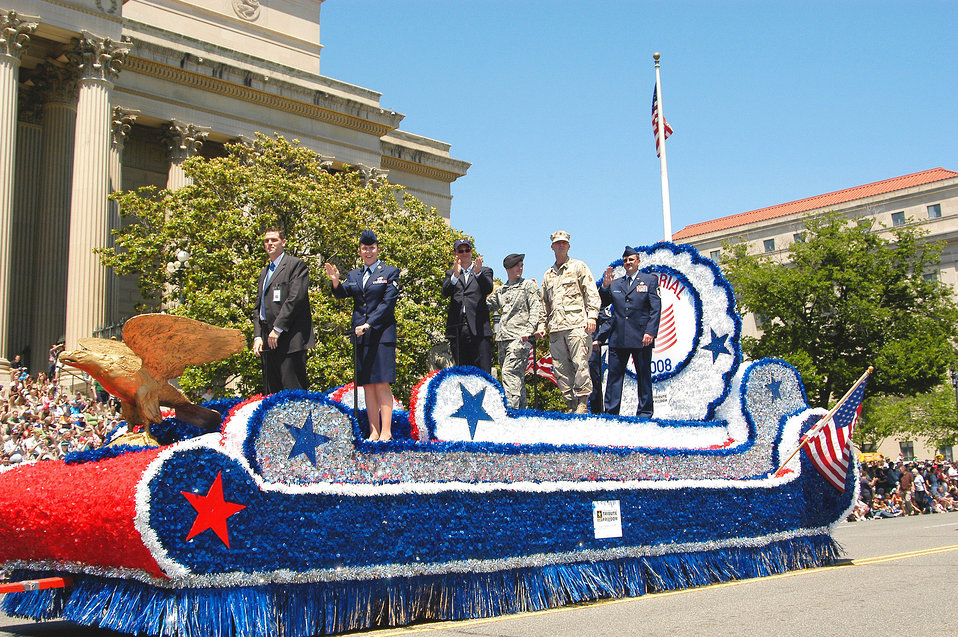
AFOSI Agent serves as Grand Marshall in National Memorial Day Parade

Special Agent Jac Christiansen (far right), Air Force Office of Special Investigations, Detachment 406, Columbus Air Force Base, Miss., and Senior Airman Mary Bullock (second from left), 11th Intelligence Squadron, Hurlburt Field, Fla., were handpicked by Air Force leadership to be grand marshals in this year's parade because of their heroic acts or outstanding work in support of Operations Iraqi Freedom or Enduring Freedom. Also aboard the lead float was actor and Grand Marshal Gary Sinise.